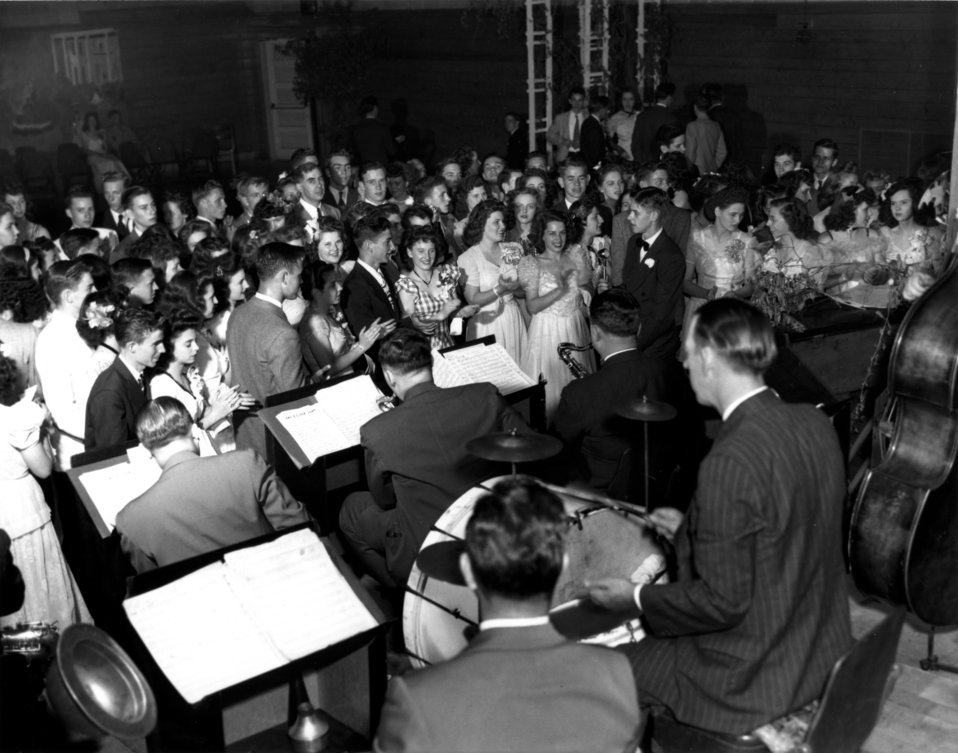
Schools at Oak Ridge